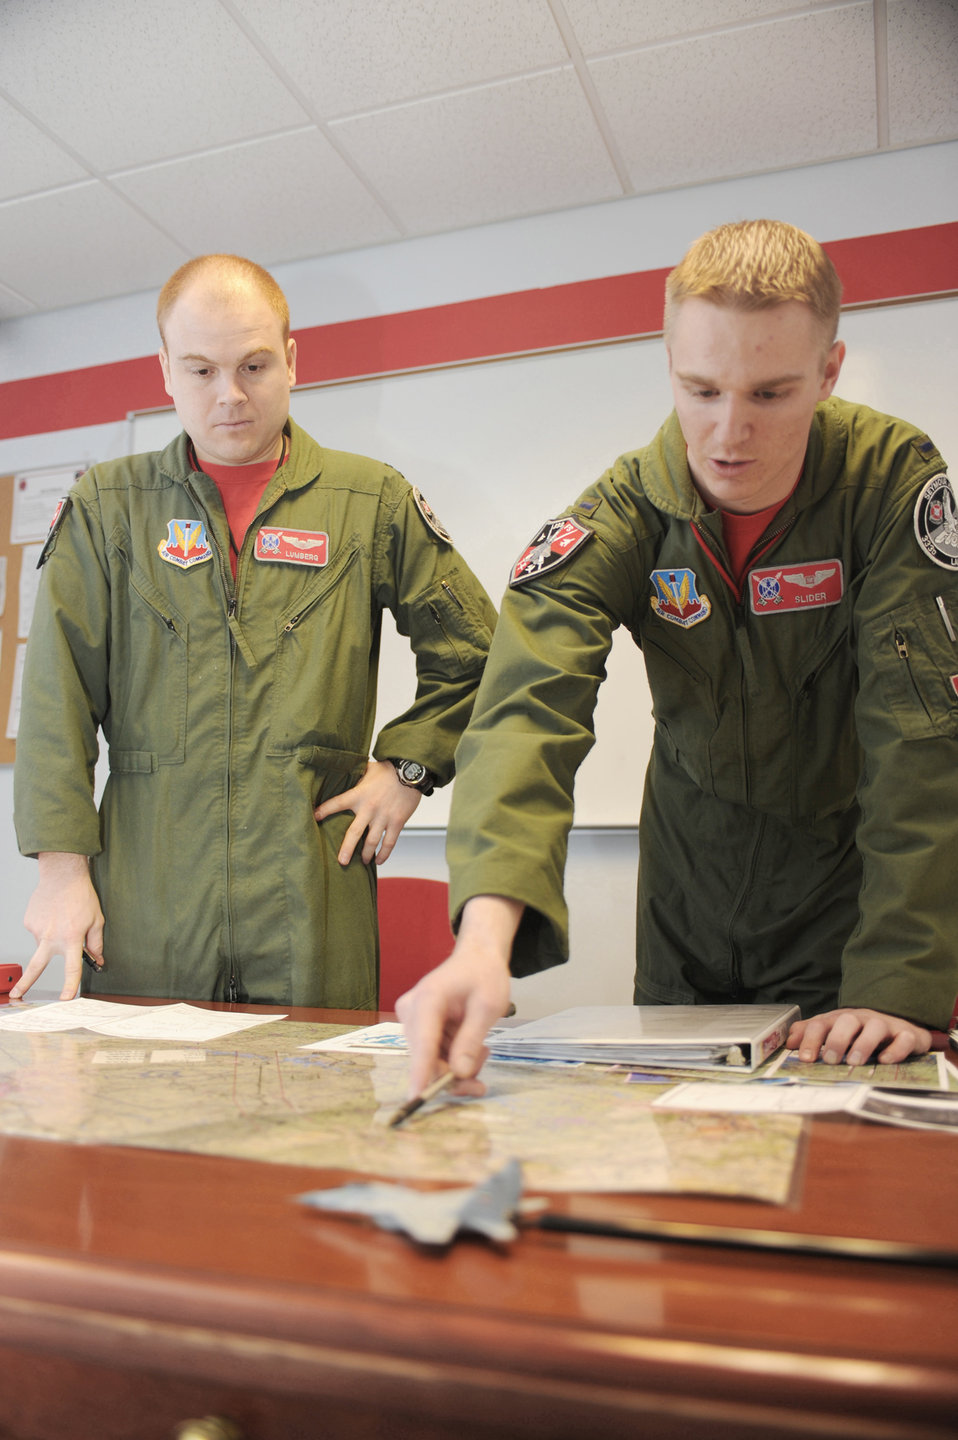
Fledgling eagles learn to fly

1st Lt. Clayton Couch gives a low-level brief to Capt. Tom Bean for their flight Feb. 5, 2010, at Seymour Johnson AFB, N.C. Lieutenant Couch is weapons systems officer student and Captain Bean is a student pilot attending the 333rd Fighter Squadron Basic Course.